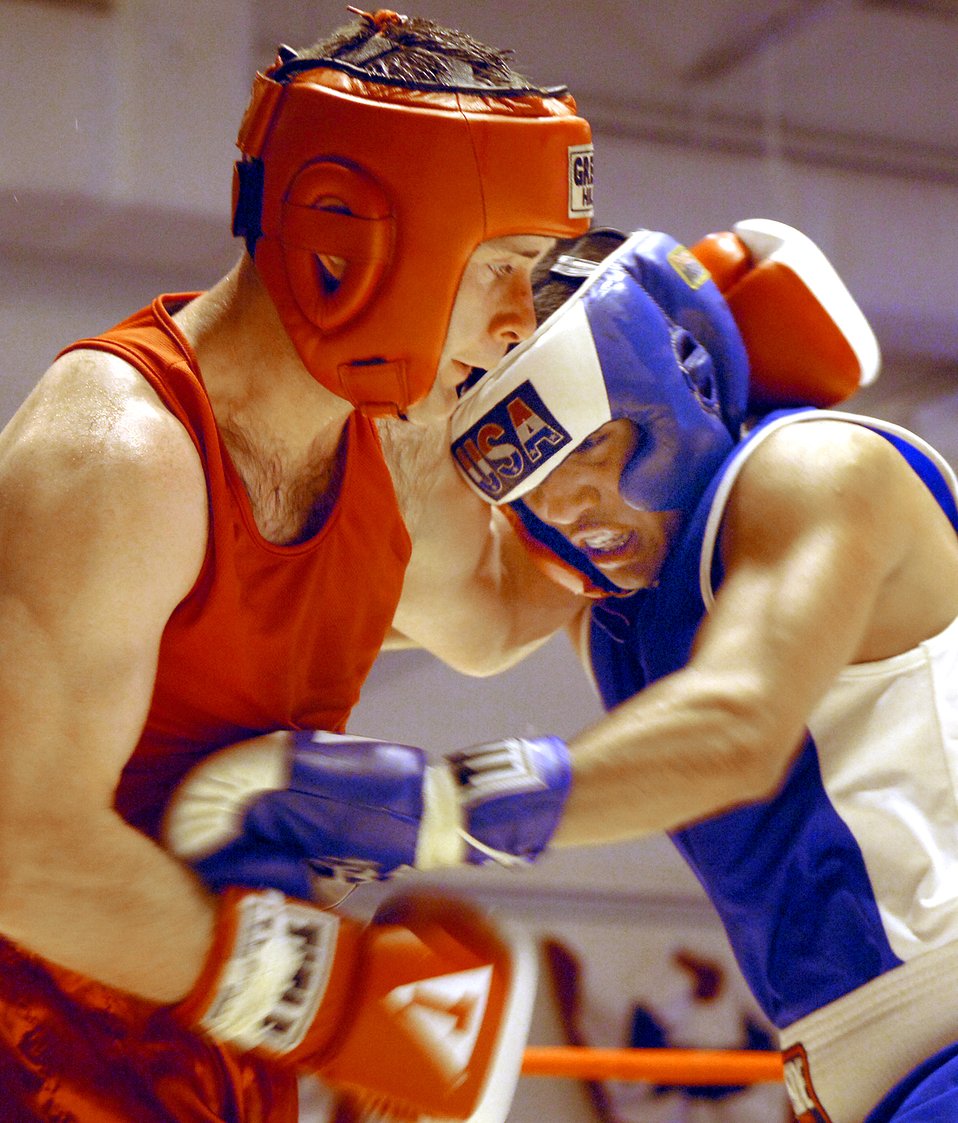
Boxing Royale

Senior Airman Pete Villarreal blocks a punch from Royal Air Force Senior Aircraftsman Anthony Carroll in the second round of their match at the Boxing Royale at the Bennett Fitness Center in San Antonio on Saturday, June 10. The event featured RAF boxers competing against U.S. military and local boxers. Airman Villarreal won by decision.